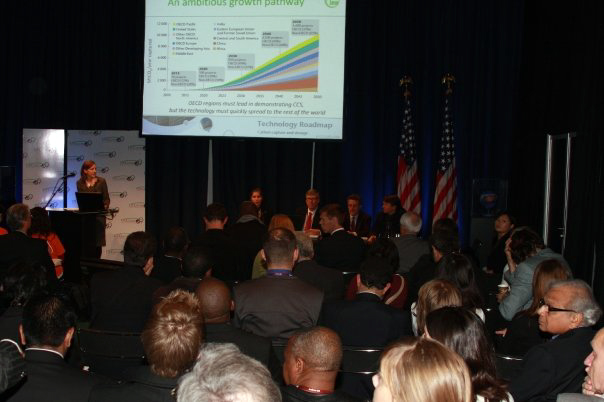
COP15 Presentation

Presentation at the U.S. Center at COP15, Bella Center, Copenhagen, Denmark on December 11, 2009.